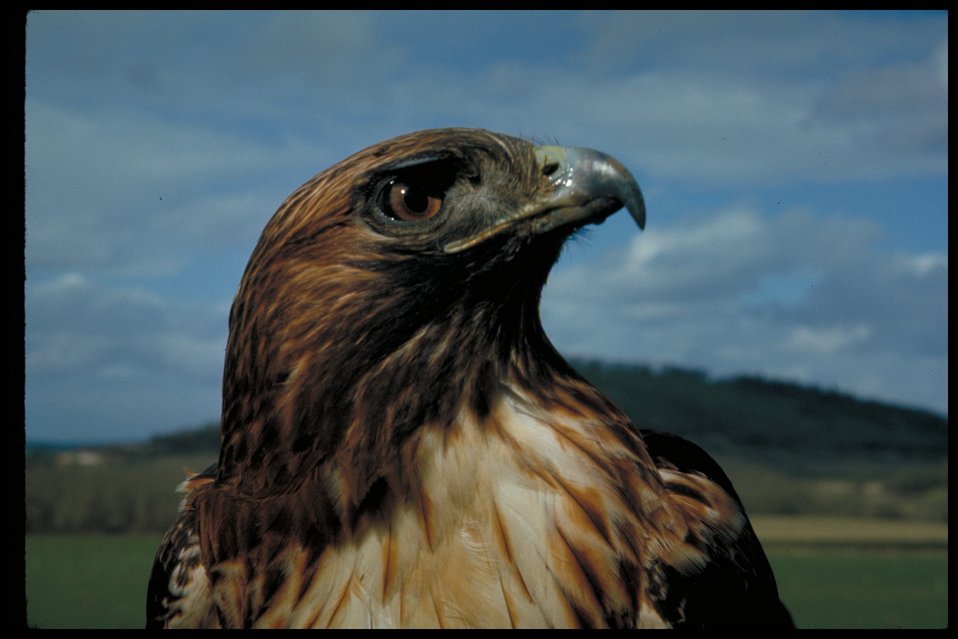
Red-tail Hawk Birds of Prey National Conservation Area BOP Owyhee Field Office LSRD Lower Snake River District